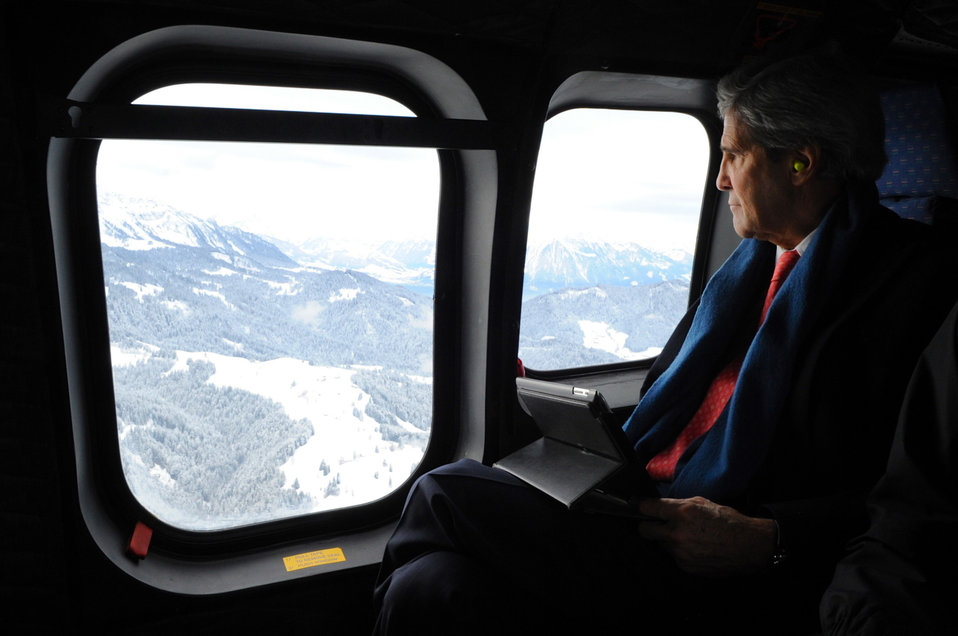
Secretary Kerry Looks Out at Swiss Landscape on Flight to Davos

U.S. Secretary of State John Kerry looks out at the Swiss landscape during a helicopter from Montreux to Davos, Switzerland, on January 23, 2014.